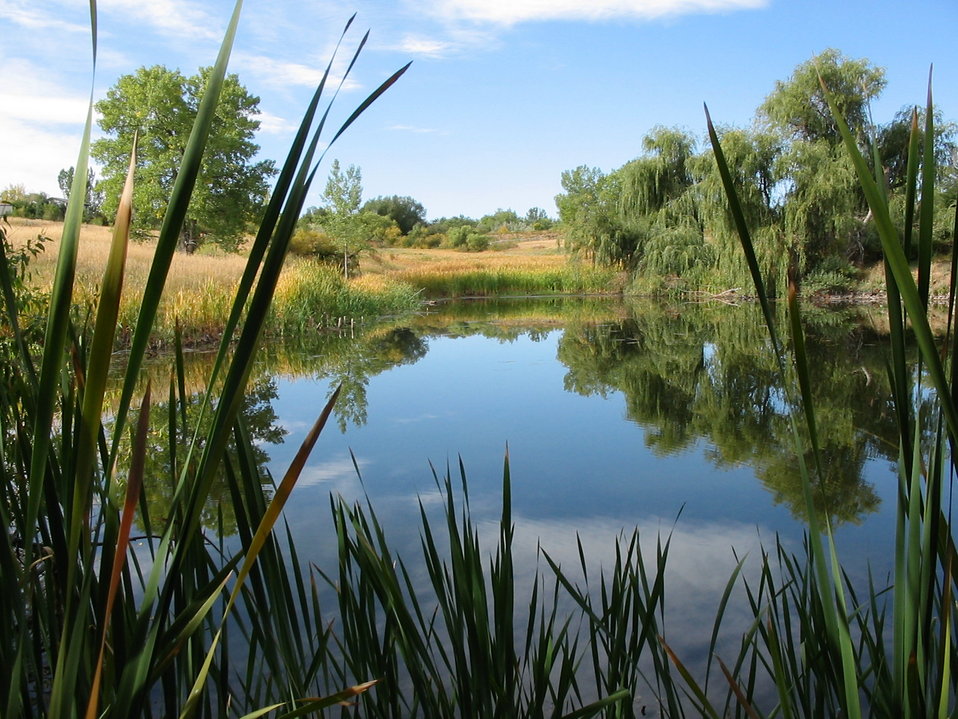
Friends Pond